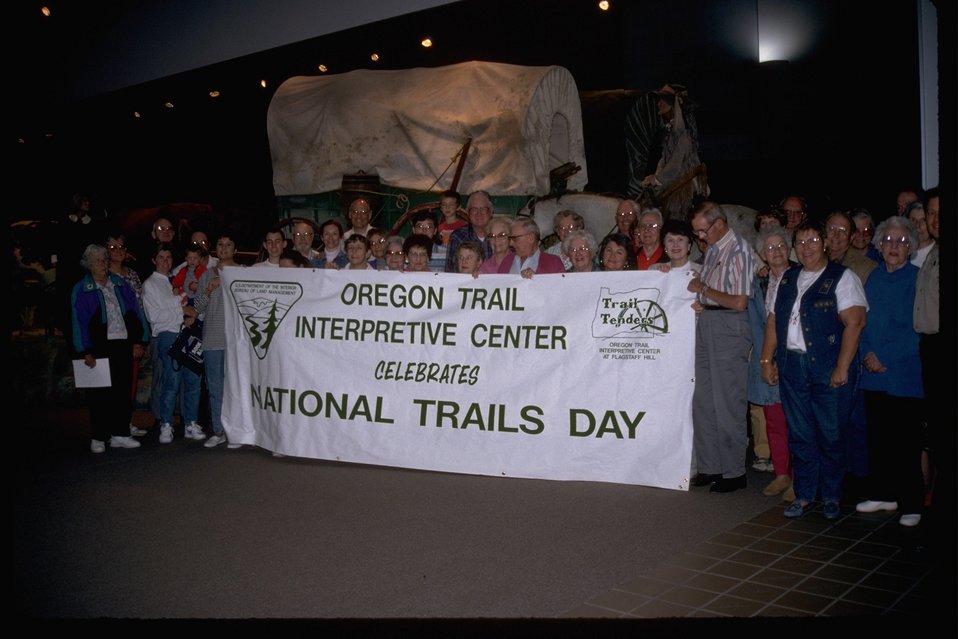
Trail Tenders celebrating the National Trails Day at the NHOTIC.